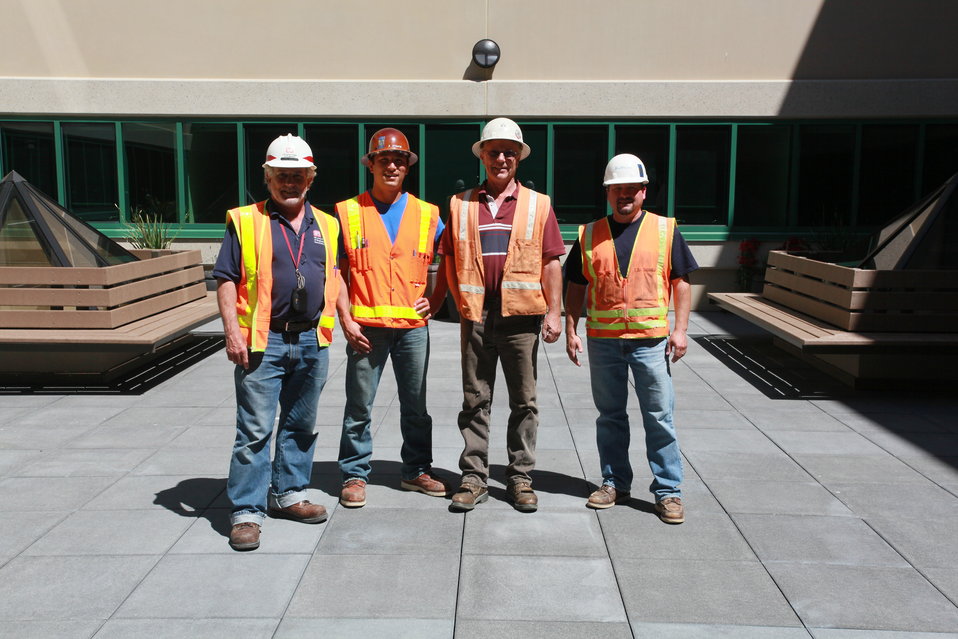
MONTEREY, Calif. (Sept. 21, 2010) - Rising above the hills of the Presidio of Monterey is the Defense Language Institute’s new general instruction building (GIB), completed in September by the U.S. Army Corps of Engineers Sacramento District. The $28 million building will house 60 classrooms for military students learning foreign languages, the first of three scheduled for Corps construction to accommodate the growing Defense Language Institute. Jack Davies(l.), Engineering Division of USACE-SPK stands in the court yard with members of the contract firm Roebbelin.